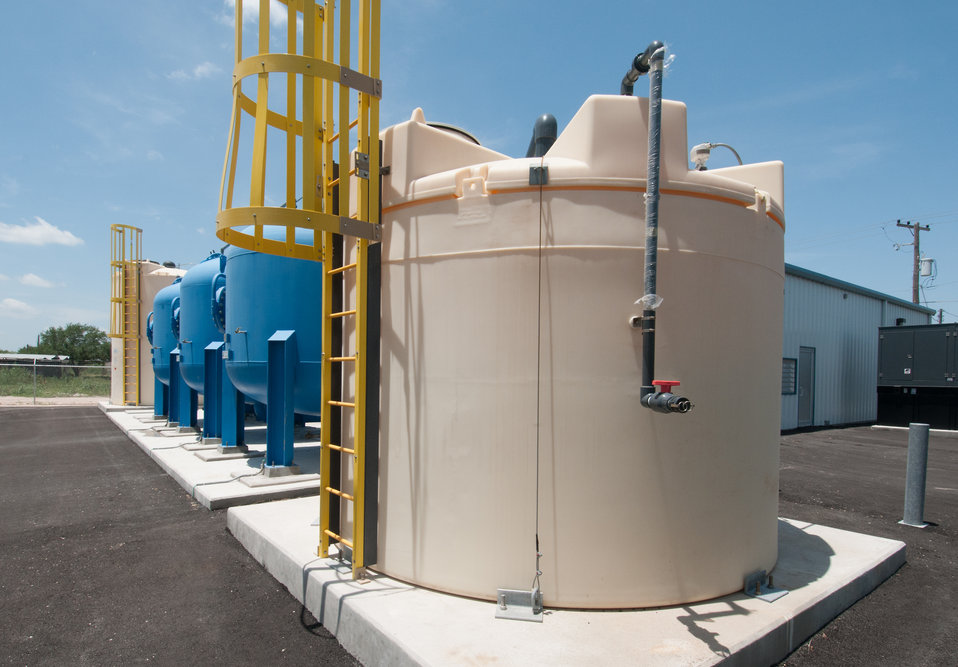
Back wash tank, (blue) arsenic removal absorber vessels, and Hydrochloric Acid (right, to balance Ph levels) at the Freer Water Control and Improvement District (FWCID) Arsenic Removal System Site, on Tuesday, June 18, 2013, in Freer, Texas.

FWCID benefits from the financial assistance of the U.S. Department of Agriculture (USDA) Rural Development (RD) to complete a two-phase approach to meeting the city’s water supply and safety needs, on Tuesday, June 18, 2013. Although, the naturally occurring arsenic levels have remained constant for more than a century, the Environmental Protection Agency (EPA) safe level standards have established lower levels of arsenic to be safe for human consumption. To meet those levels FWCID approached USDA and was awarded a $986,000 loan for Phase I, to install two new water wells, each rated at 167 gallons per minute (creating a total of eight wells); 13,600 feet of well collection lines; and 15,000 linear feet of well control line to remotely control the well pumps and the 1,000,000 gallon holding tank at the well facility, which supplies water to the new Arsenic Removal System (Phase II). Previously, water was manually controlled by personnel who knew when and how long to manually opened and closed water valves or started well pumps to ensure holding tank levels were within operating levels during peek and slack times of the day. Phase II was a combination of a $1,832,000 loan and a $1,258,750 grant, which provided for the customized arsenic removal system, seen in these photos. The system includes a new 3,530 sp. ft. facility, on a .76-acre site, and houses the operations room, computer and power system, laboratory room, and pump systems. The entire operation can be monitored through a desktop computer interface system. The computer-controlled system ensures raw water is fed to the arsenic removal pump system, which works in sequence to maintain a constant pressure, when needed, to pump water through (blue) arsenic removal absorber vessels, and into ground storage tanks that feeds the residential and commercial needs of the city. Samples of water are periodically tested; and so far the arsenic levels have been below 1 part per billion (PPB), well under the 10 PPB limit.